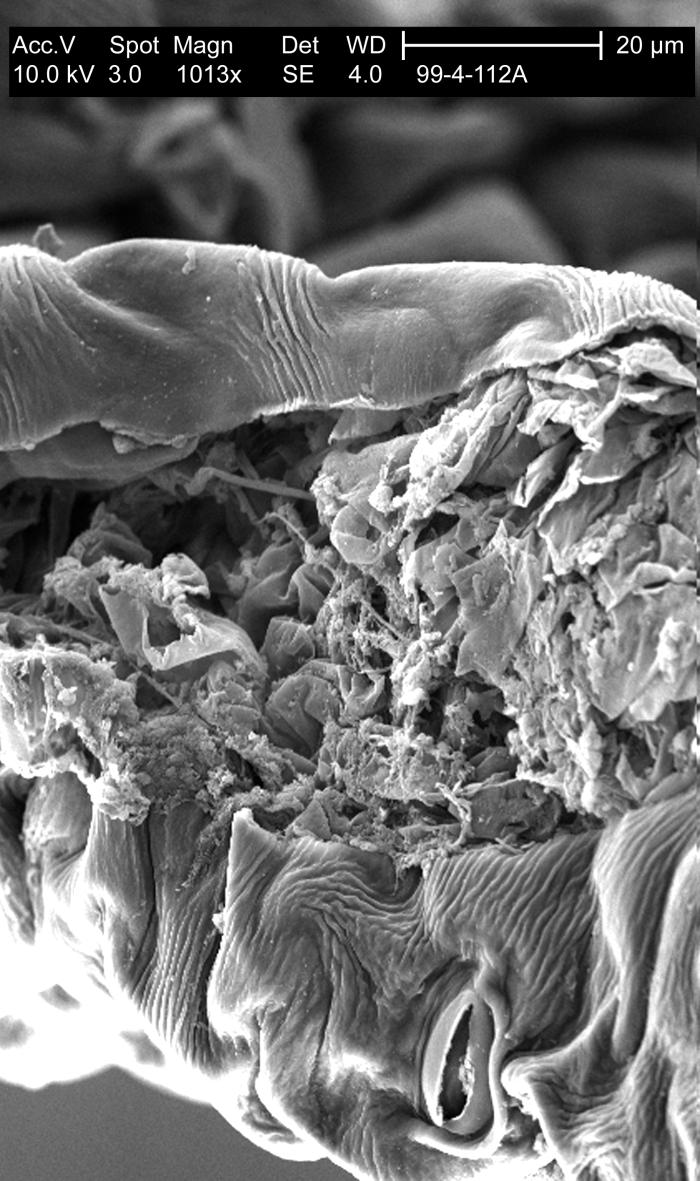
This scanning electron micrograph (SEM) reveals the textured surface at the injury site on a leaf of cut parsley; Mag.-1013x.